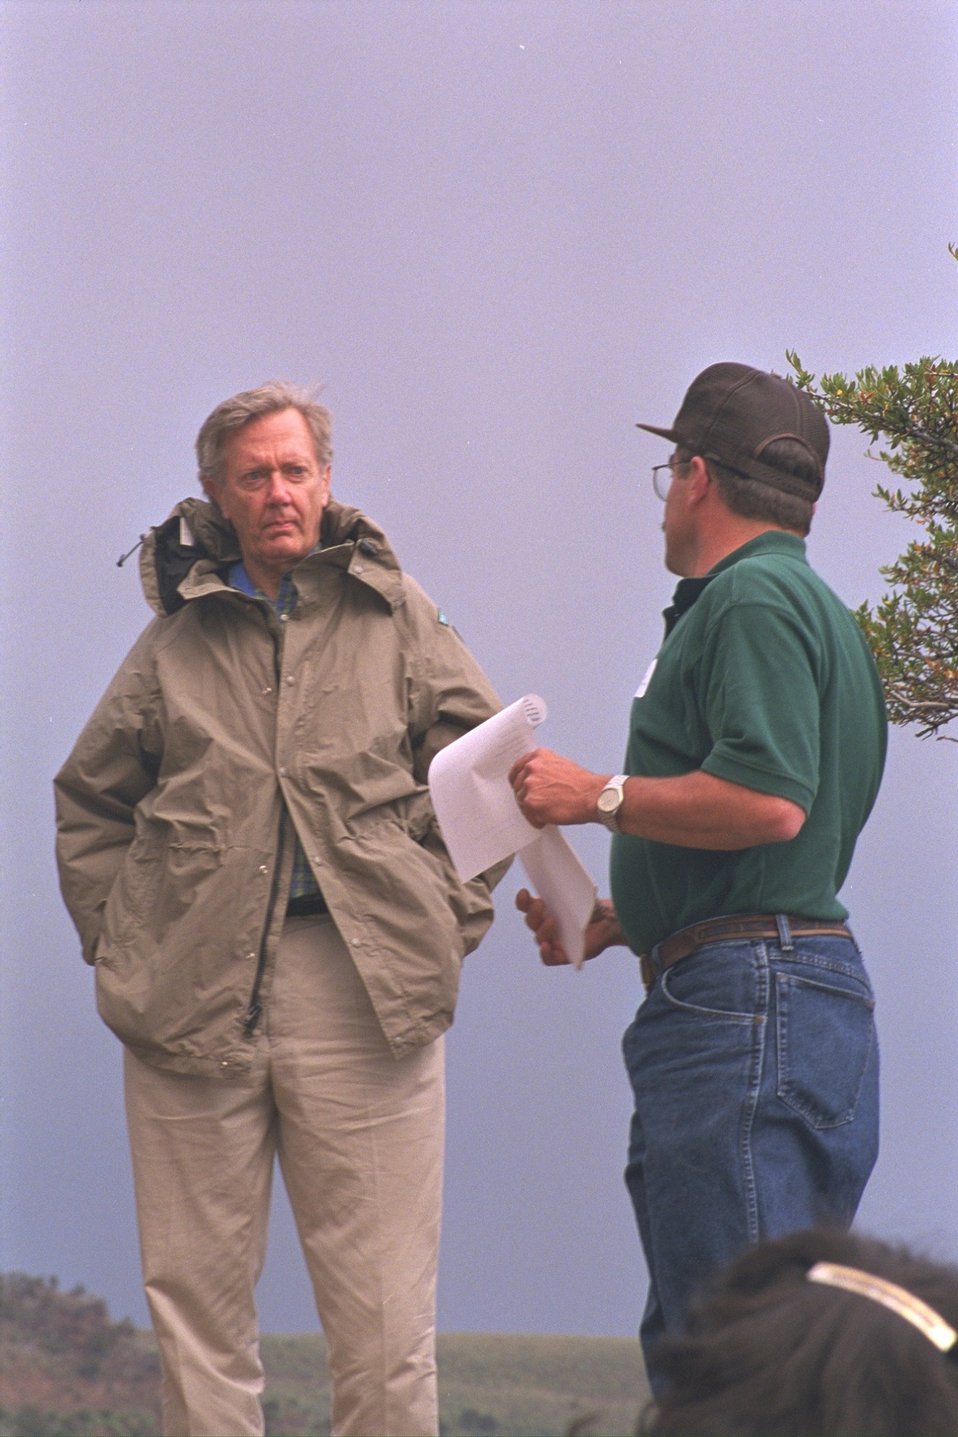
Secretary Babbitt and David Blackstun at Steens Tour.